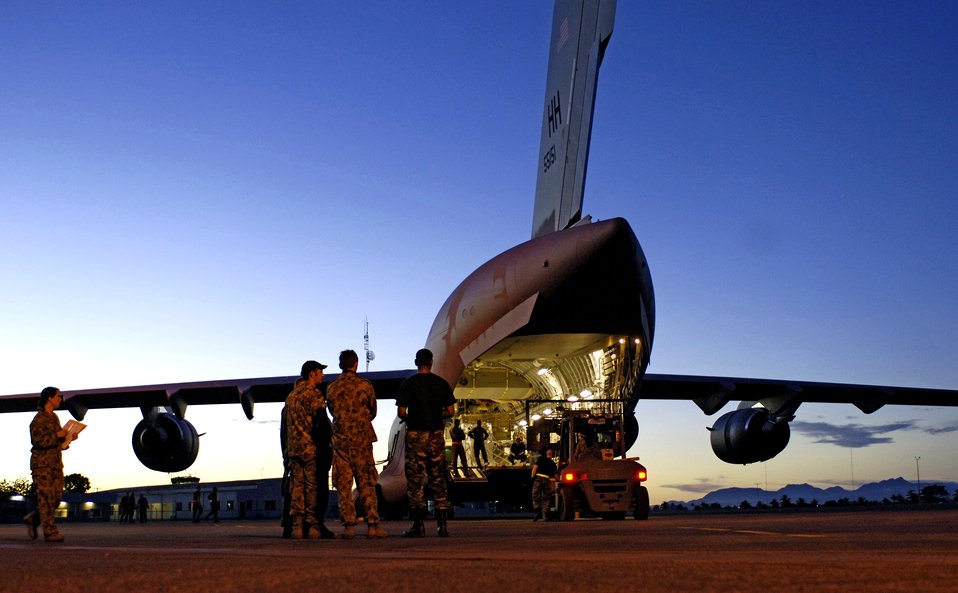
Australians learn from U.S. C-17 mission

Airmen from the Australian 1st Air Terminal Squadron observe the loading of equipment onto a C-17 Globemaster III at Honiara International Airport, Solomon Islands, on Sunday, May 28, 2006. Two C-17s from the 15th Airlift Wing and Hawaii Air National Guard's 154th Wing at Hickam Air Force Base, Hawaii, are helping the Australian Defense Force reposition its forces to better support peace operations in East Timor.